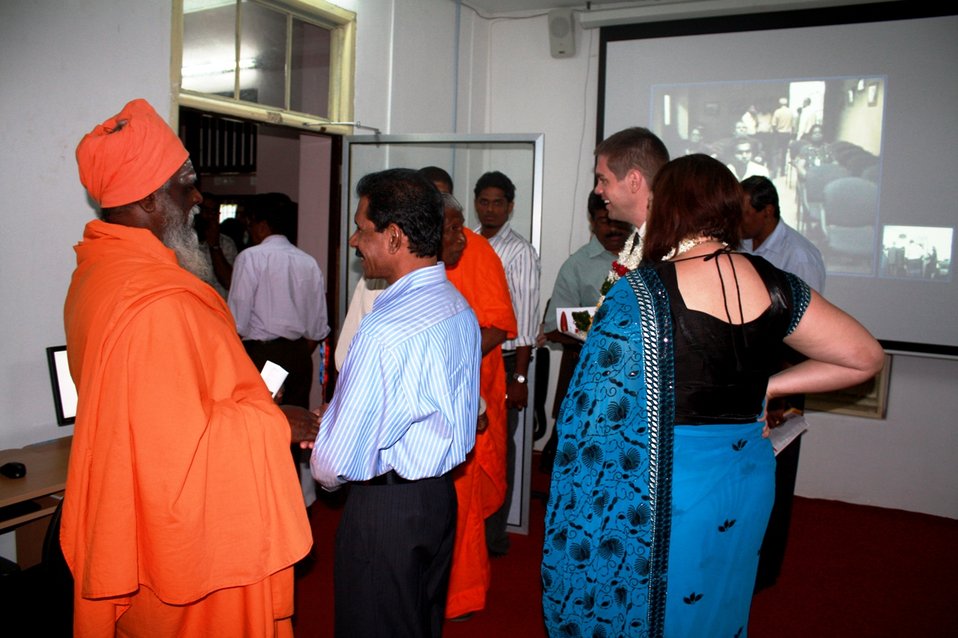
Attendees chat at the opening of the American Corner Jaffna in Colombo, Sri Lanka, on January 24, 2011.